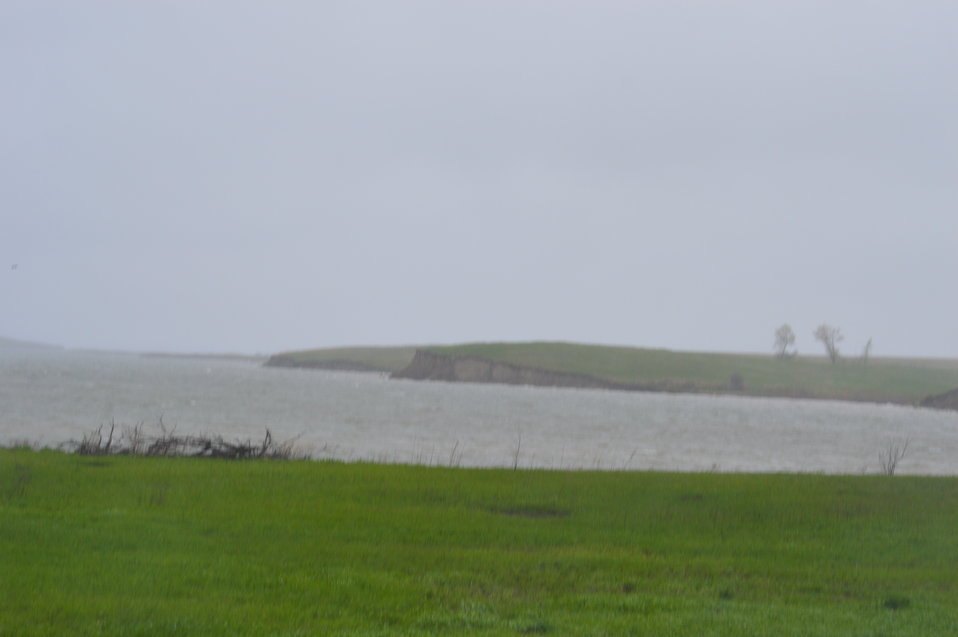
Audubon Lake

Scenery and wildlife and Audubon National Wildlife Refuge in North Dakota.